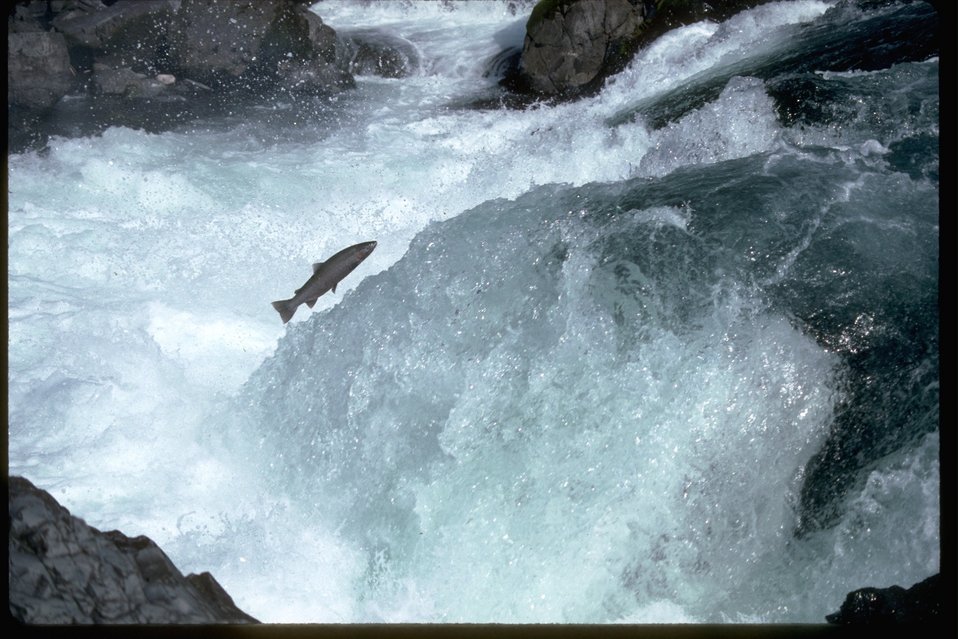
Salmon or Steelhead jumping up falls.